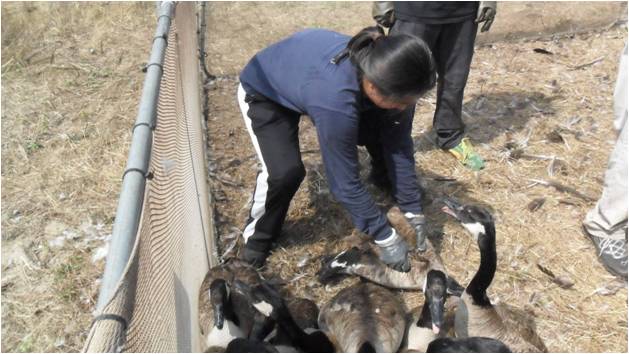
Canada geese

U.S. Fish and Wildlife Service